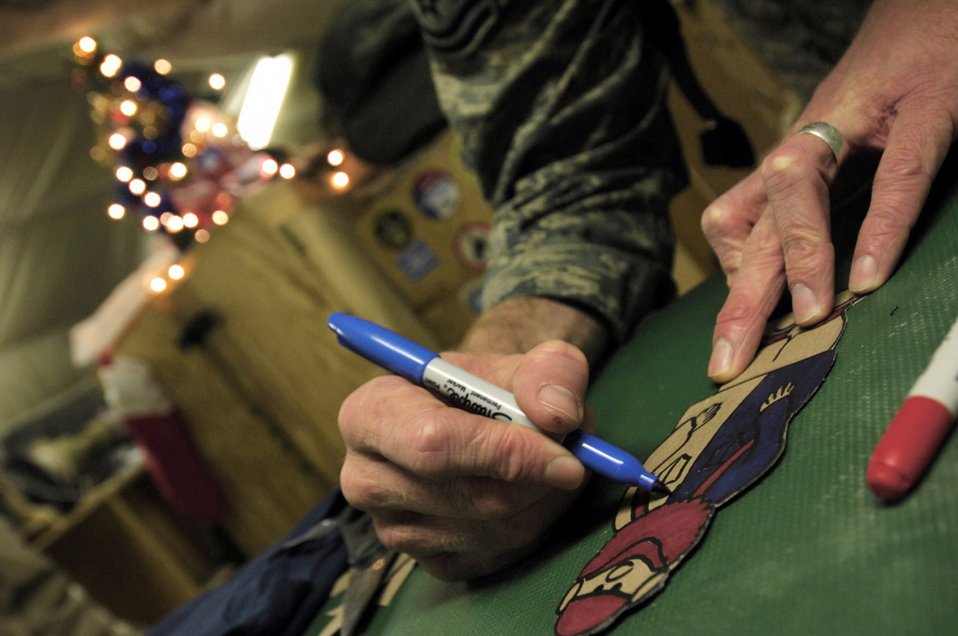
Holiday spirit in Afghanistan

Tech. Sgt. Ryan McMaster colors cartoon characters for a holiday diorama he created from locally-procured materials Dec. 14 at Bagram Air Base, Afghanistan. Sergeant McMaster is an aircrew life support technician with the 774th Expeditionary Airlift Squadron.